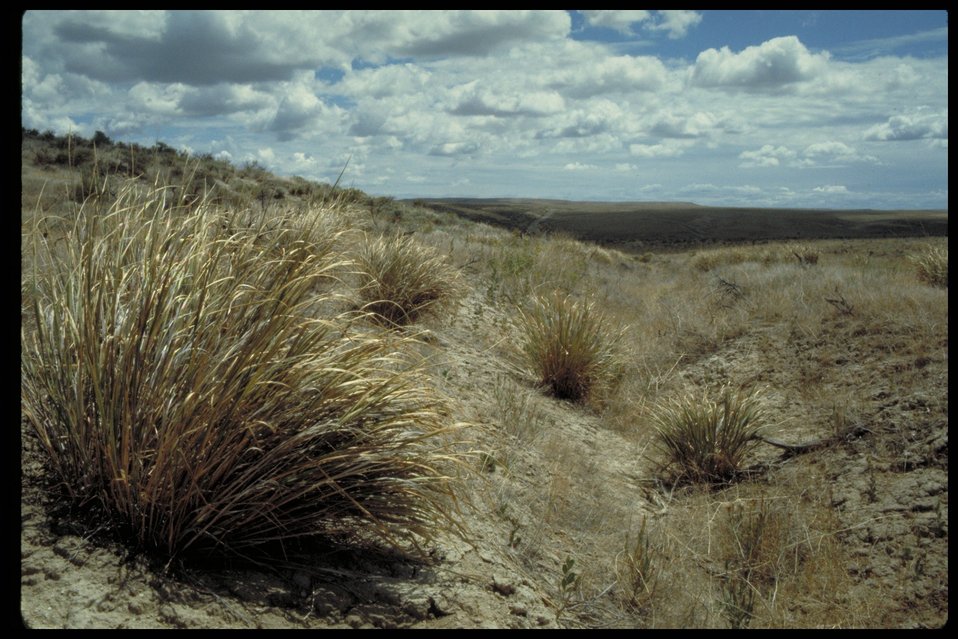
West of Deer Gulch crossing Oregon Trail Lower Snake River District